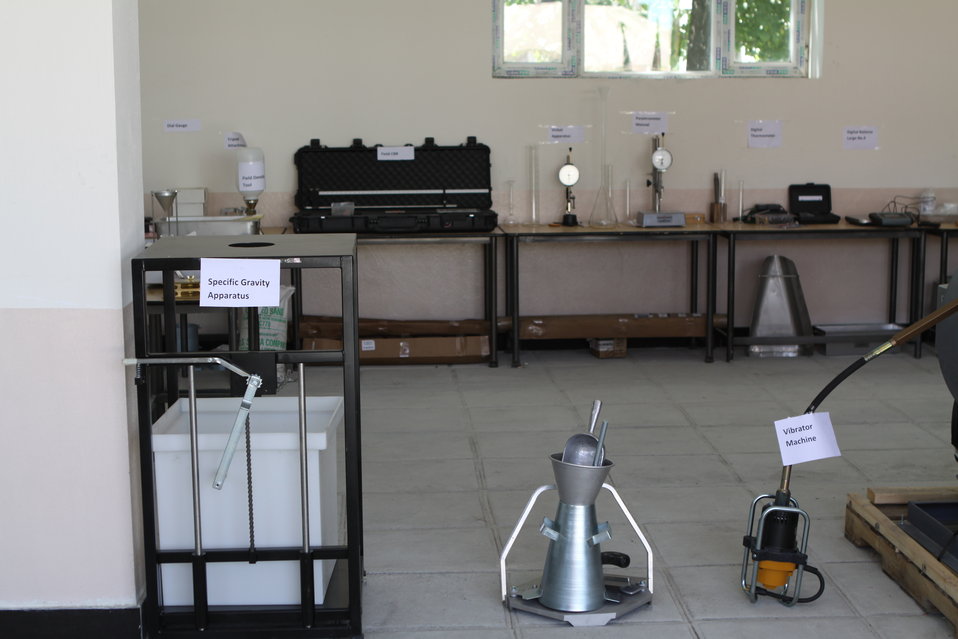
100522 ATVI Graduation 002